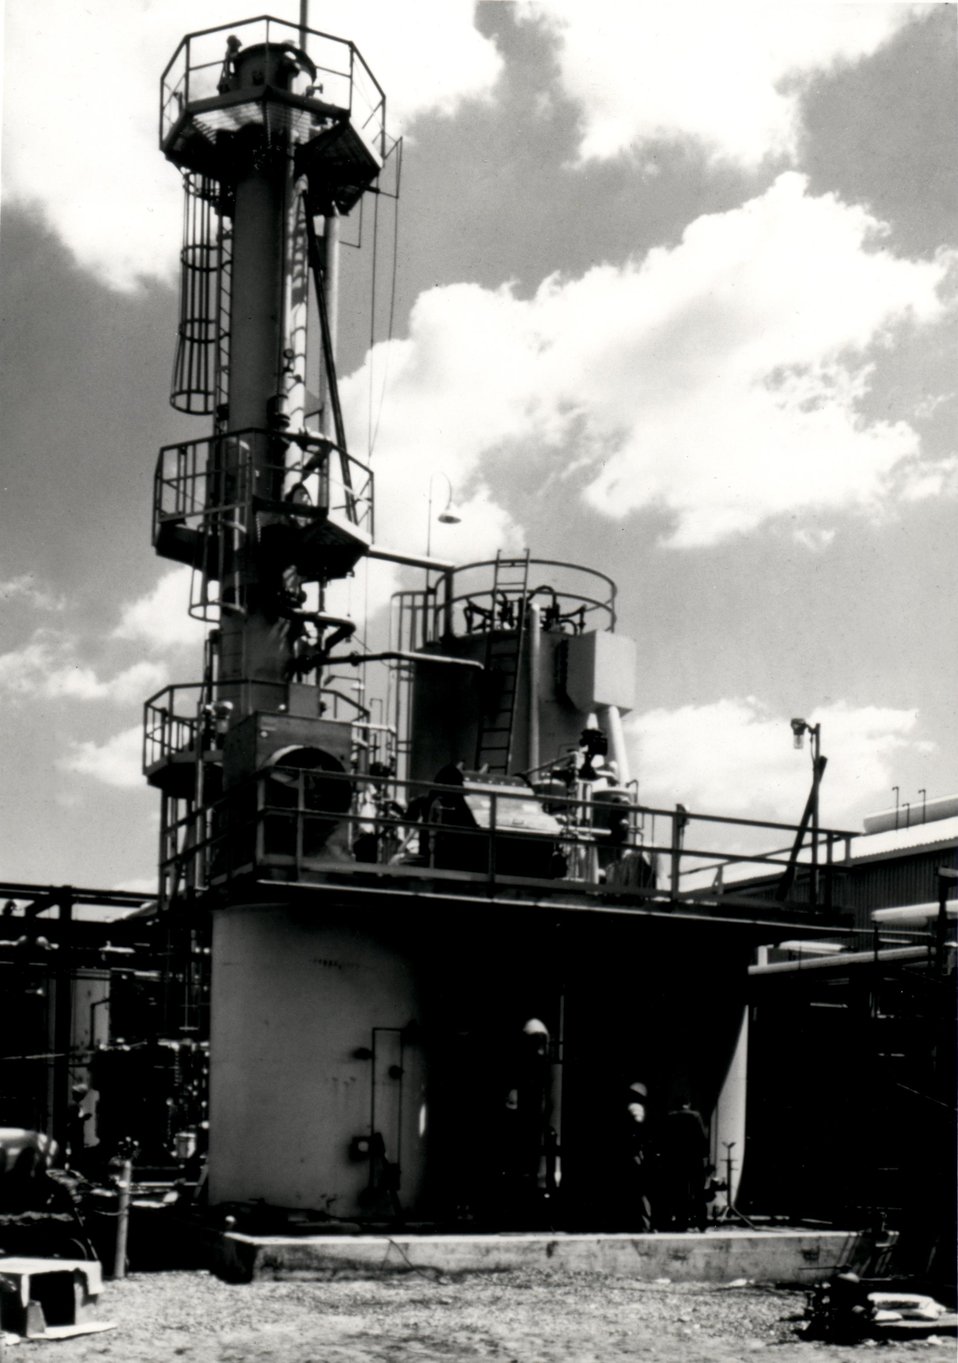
Under contract to ERDA, Fluor Engineers and Constructors, Los Angeles, California, has revamped and put into operation this coal liquefication pilot plant at Cresap, West Virginia, 25 miles from Wheeling. Circa 1977.